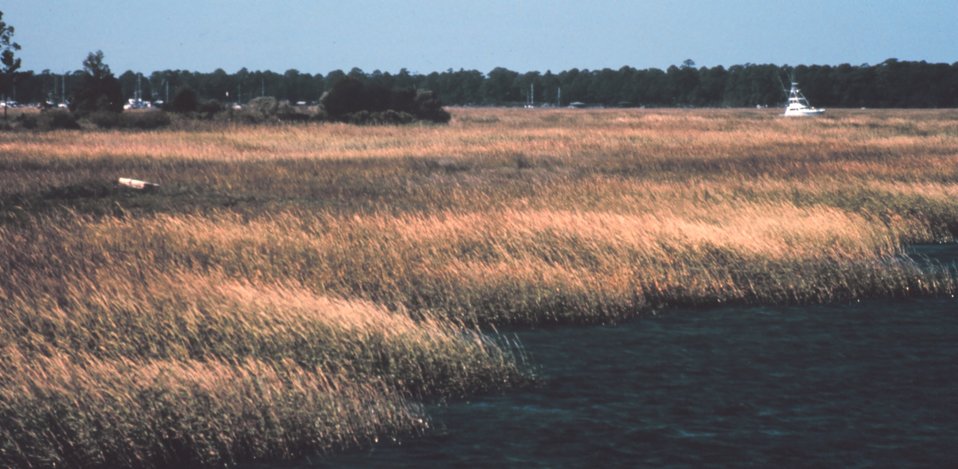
Wetlands in the vicinity of Charleston.